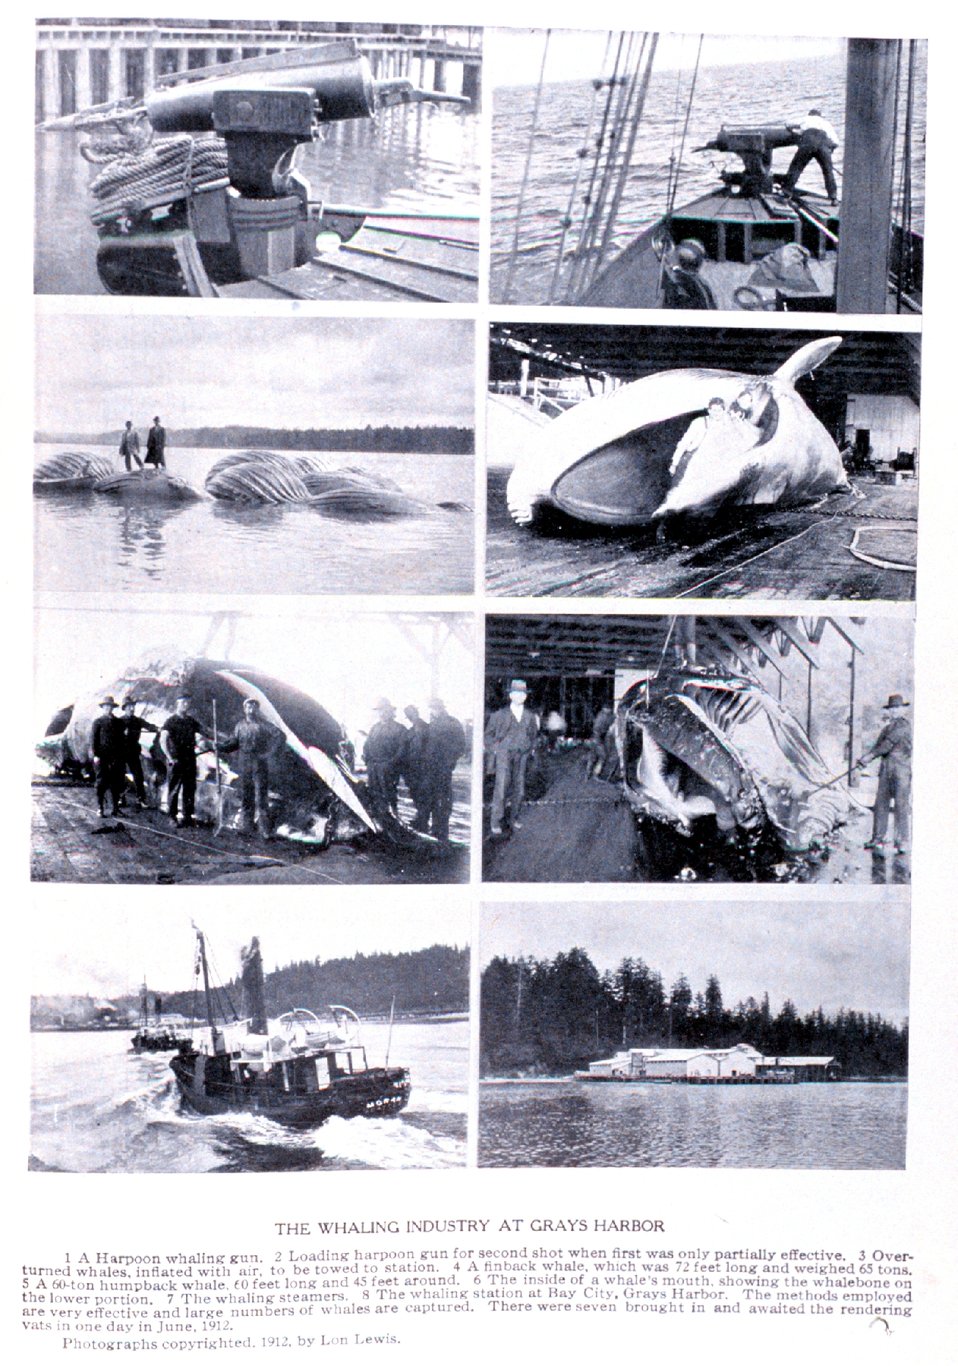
'The Whaling Industry at Grays Harbor'. In: 'Puget Sound and Western Washington Cities-Towns Scenery', by Robert A. Reid, Robert A. Reid Publisher, Seattle, 1912. P. 157.